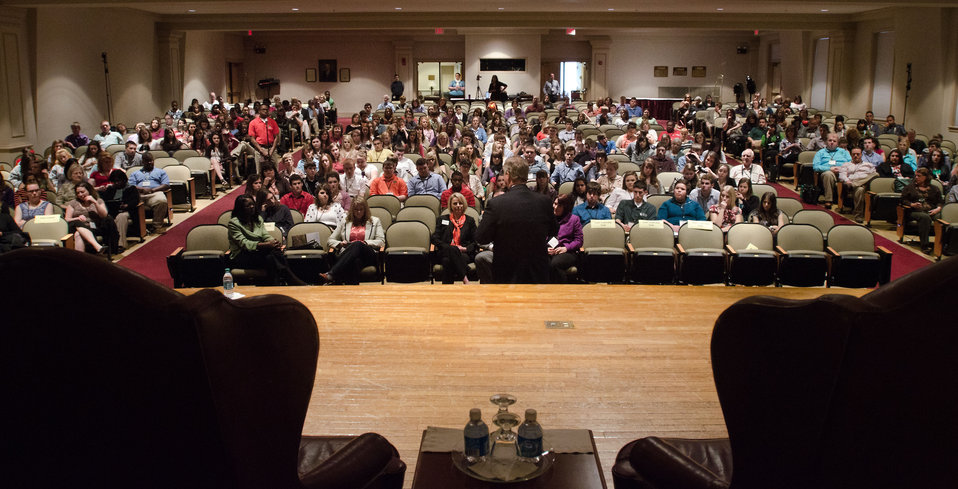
Agriculture Secretary Tom Vilsack speaks with 4-H members at the National 4-H Youth Center in Chevy Chase, MD, on Monday, March 26, 2012. 'For almost 100 years, USDA and 4-H have partnered to produce some of our nation's best and brightest, including farmers and ranchers who have supported the American economy and put food on our tables,' Vilsack said. 'You all are tomorrow's leaders. We need you to think big, innovate and help tackle the important challenges standing between us, a stronger middle class and a stronger nation.'